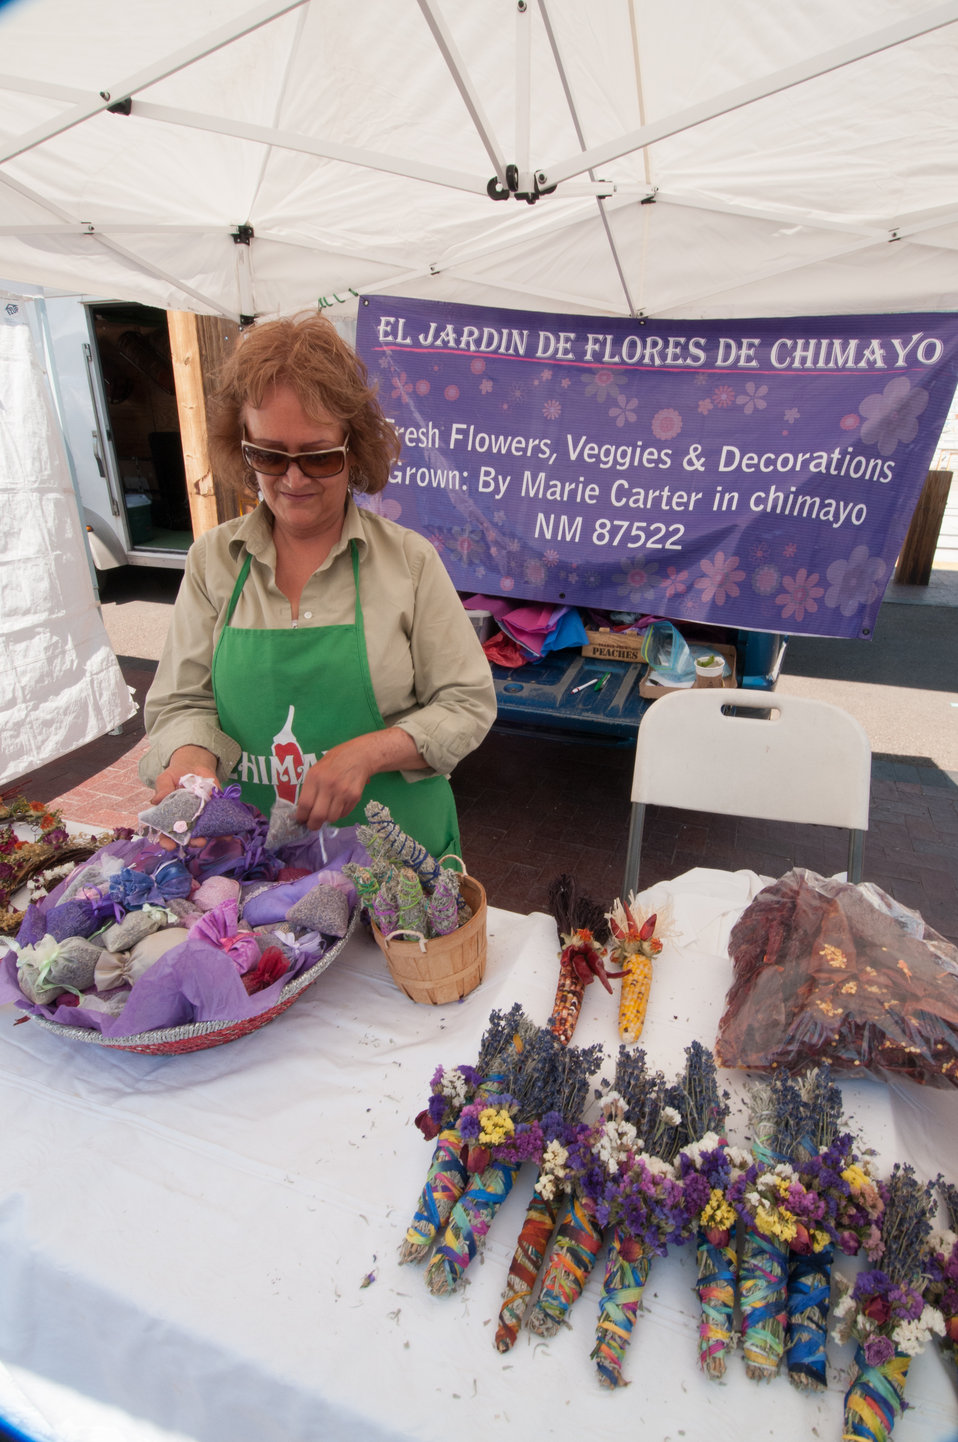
De Chimayo, NM El Jardin De Flores Marie Carter arranges dried flowers at her stand at the Santa Fe Farmers Market in Santa Fe, NM on Tuesday, Jun. 11, 2013. The Santa Fe Farmers Market is one of the oldest, largest and most successful growers’ markets in the country. Serving more than farmers and producers in 15 Northern New Mexico counties, the market brings fresh food; education promotes small farms and sustainable agriculture in Northern New Mexico. The Market began with a handful of farmers in the late 1960’s and represents over 100 active vendors and features hundreds of different agricultural products. The Santa Fe Farmers Market assures 100% percent of the vegetables, fruits, and nursery plants available at the market are locally grown by the people selling them.